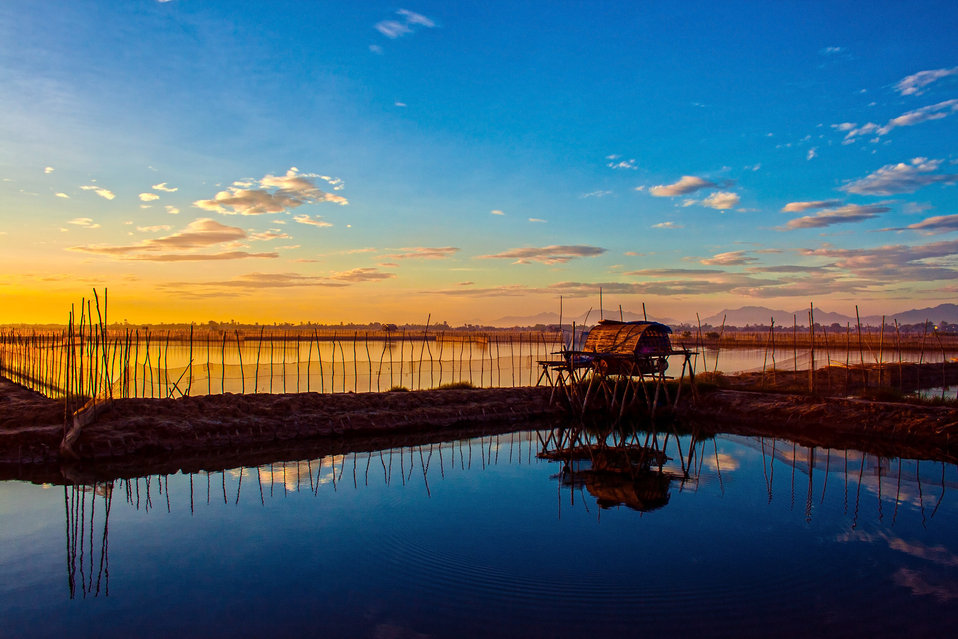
Quiet dawn

Dawn in the lagoon, hue province, vietnam..